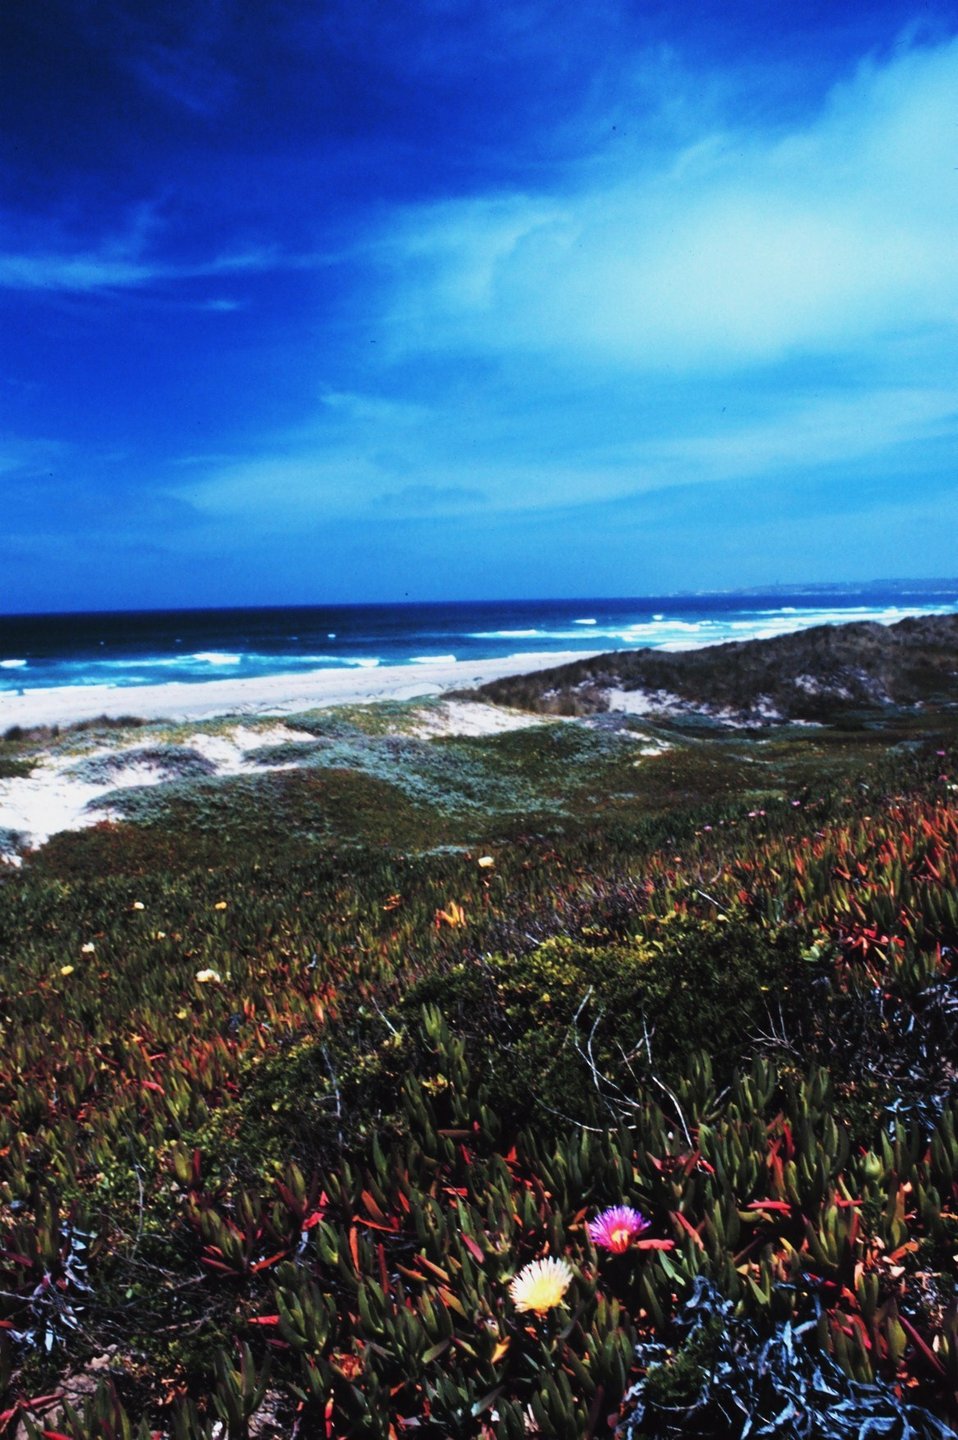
Looking over the dunes to a sandy beach at Surf